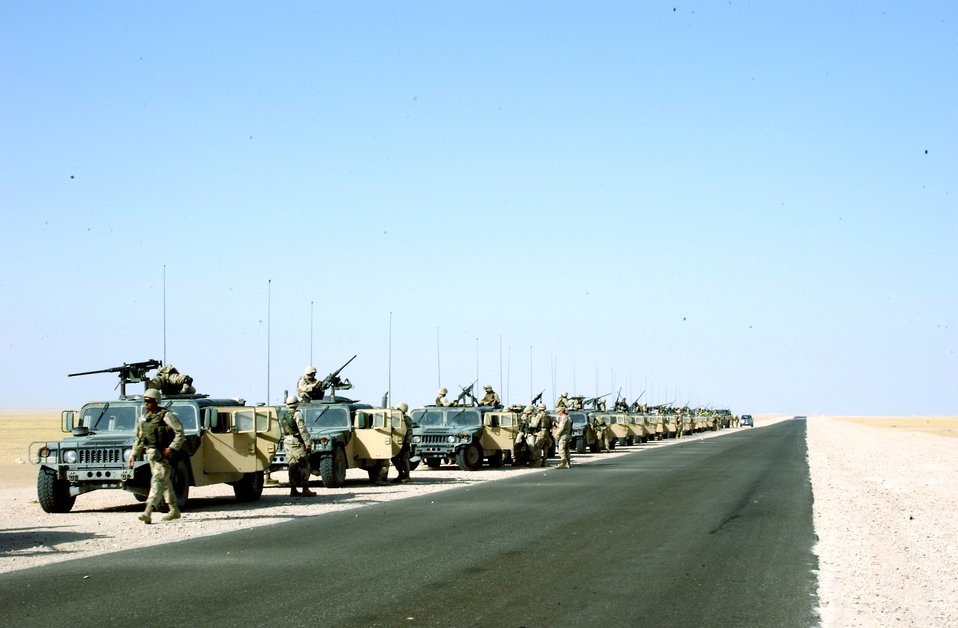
Next group of Airman-Soldiers set to move into Iraq

SOUTHWEST ASIA -- A convoy prepares to go on a training mission July 15. More than 150 Airmen participated in the training exercise designed to prepare them for upcoming missions. The Airmen completed the final stages of live-fire convoy training at Balad Air Base, Iraq, on July 16 before deploying north to Mosul as part of the 494th Air Expeditionary Force Truck Company.